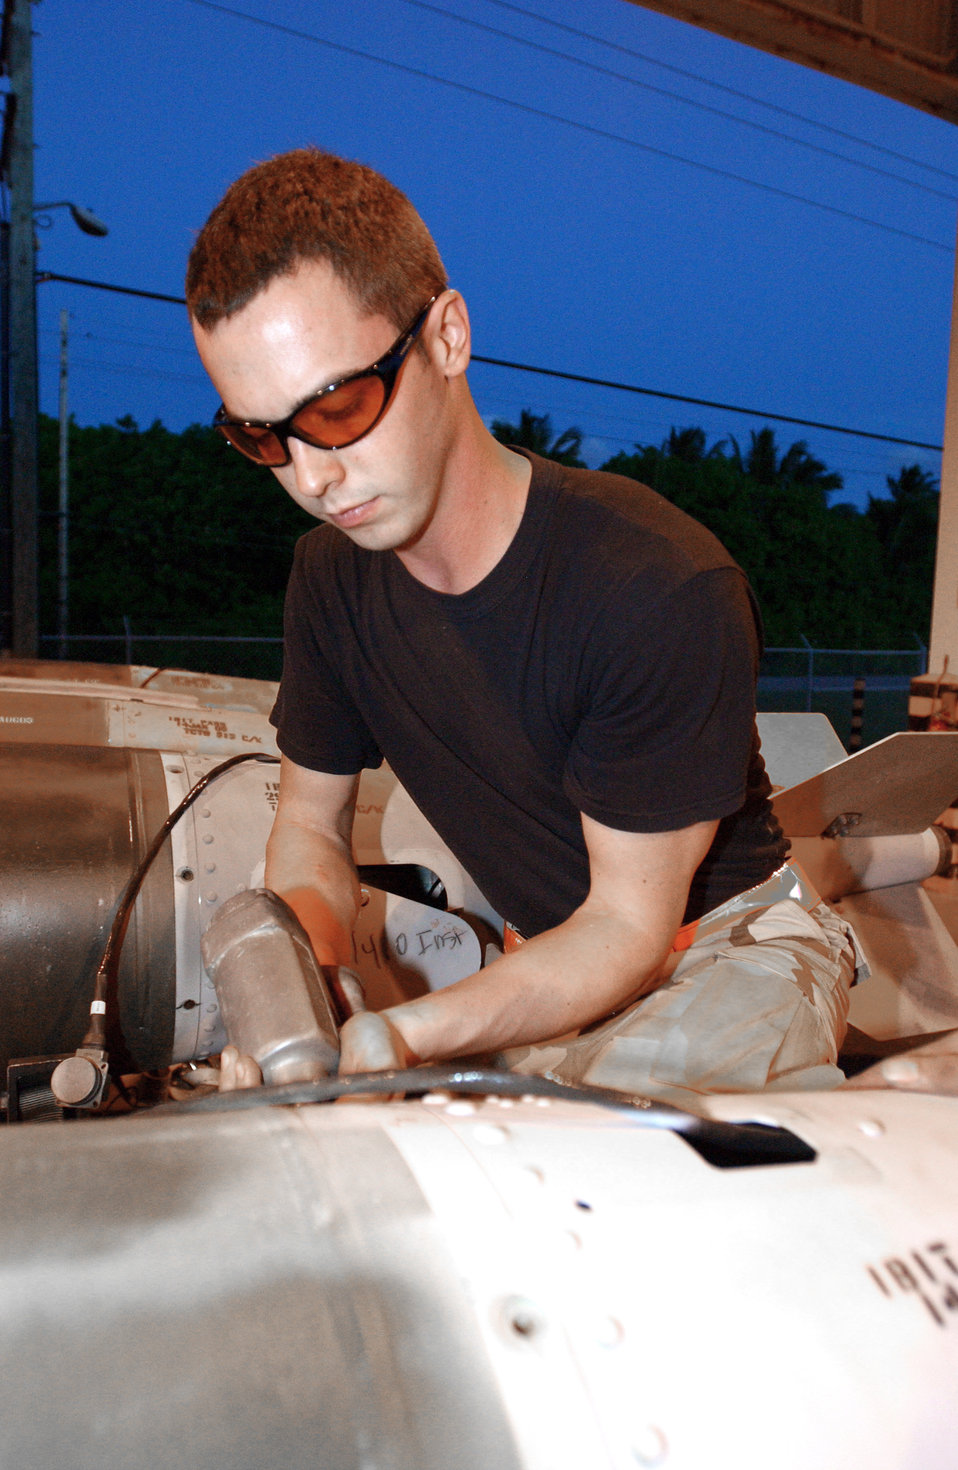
Ammo

OPERATION ENDURING FREEDOM -- Airman 1st Class Christopher Stegman removes the fin kit of a joint-direct attack munition for cleaning during semiannual refurbishment at a forward-deployed location. Airman Stegman is a munitions specialist with the 40th Expeditionary Maintenance Squadron and is deployed from Minot Air Force Base, N.D.